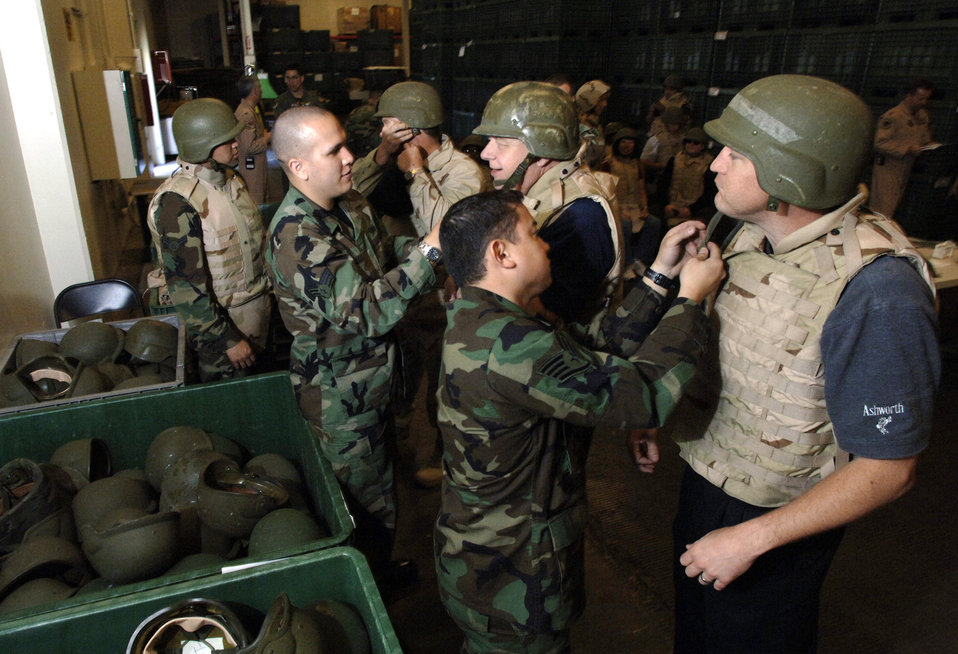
Civic leaders tour Travis during Air Force Week

Dan Borges tries on a flak jacket during an honorary commanders' tour June 7 as part of Air Force Week at Travis Air Force Base, Calif. The purpose of Air Force Week is to inform and educate the American public about the importance and roles of the Air Force in America's national defense.